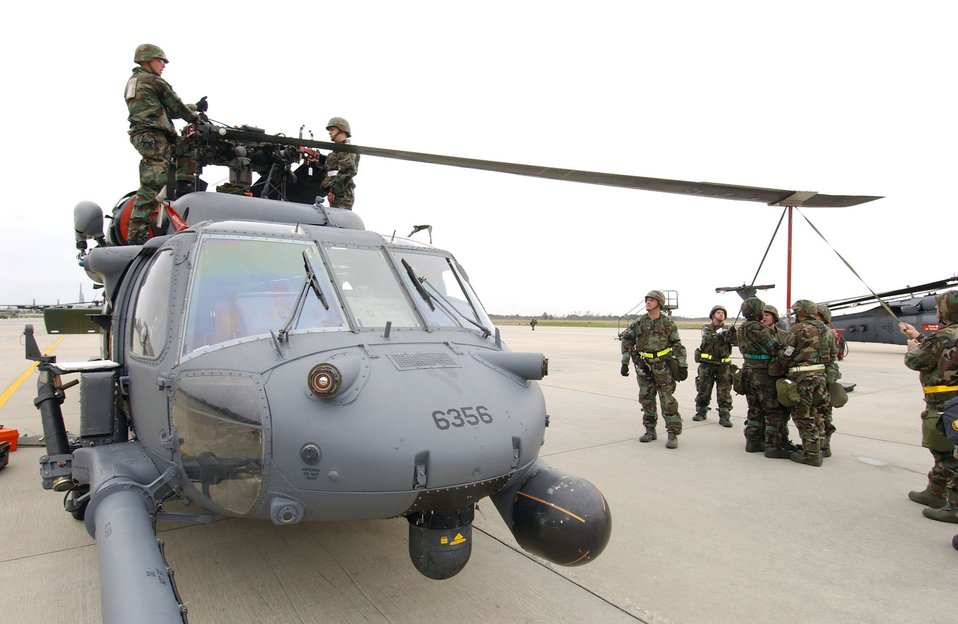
Steady as she goes

MOODY AIR FORCE BASE, Ga. -- Airmen work on an HH-60G Pave Hawk helicopter during the kick-off of the 347th Rescue Wing's operational readiness inspection. The Air Force's only combat search and rescue wing is undergoing its first ORI since transitioning to Air Force Special Operations Command in 2003.